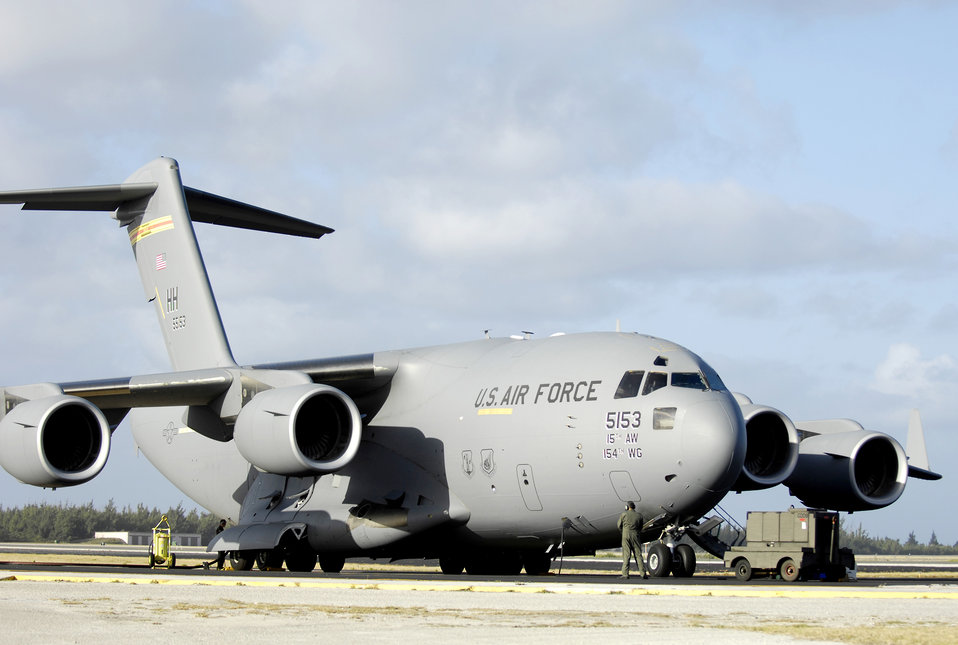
Hawaii Guard deploys after tsunami hits American Samoa

A C-17 Globemaster III sits on the flightline prepared to take off. A similiar C-17 from the 15th Airlift Wing from Hickam Air Force Base, Hawaii, transported 90 Hawaii National Guard members Sept. 30, 2009, to American Samoa after a tsunami struck the island Sept. 29, 2009.